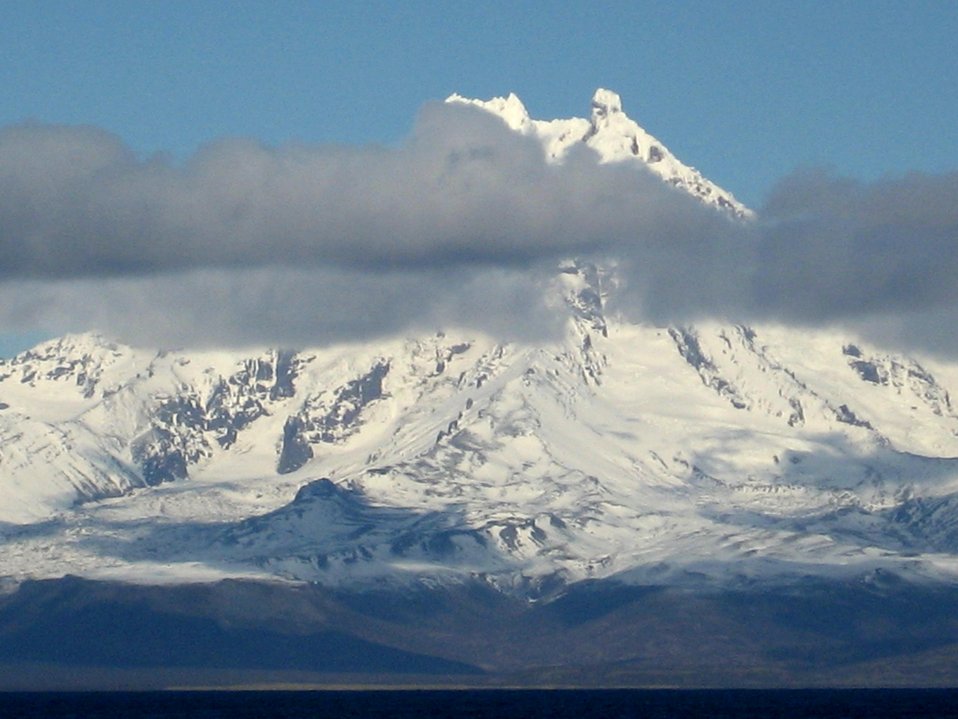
Isanotski Volcano on Unimak Island, also called Ragged Jack because of its prominent horns.